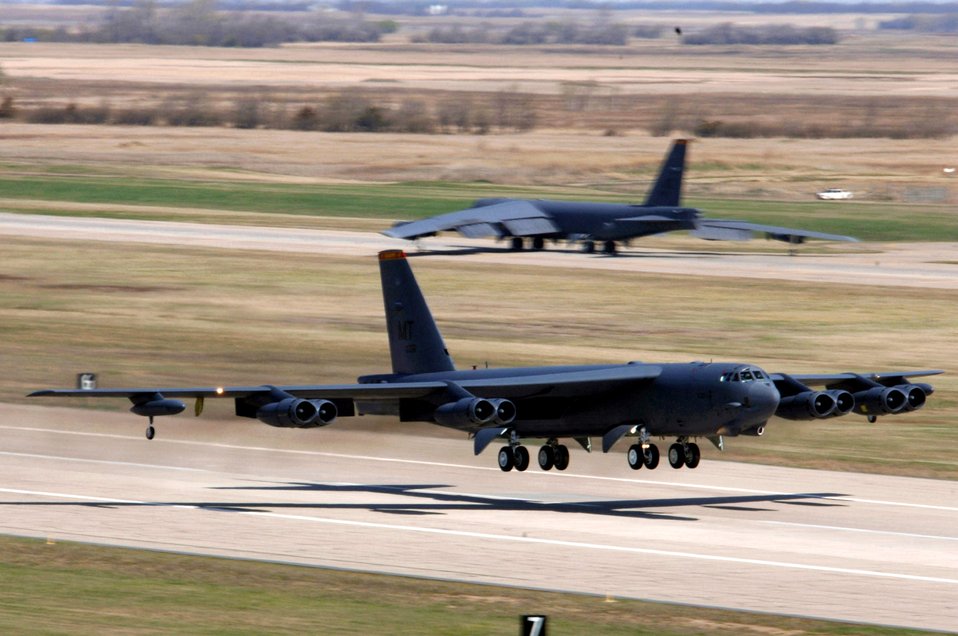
Air Force prepares to test synthetic fuel on B-52

A B-52 Stratofortress powered by a mix of synthetic and JP-8 fuel is slated to take its first flight Sept. 19 from Edwards Air Force Base, Calif., bringing the Air Force one step closer to reducing its dependence on foreign fuel.
The B-52s shown are at Minot Air Force Base, N.D.